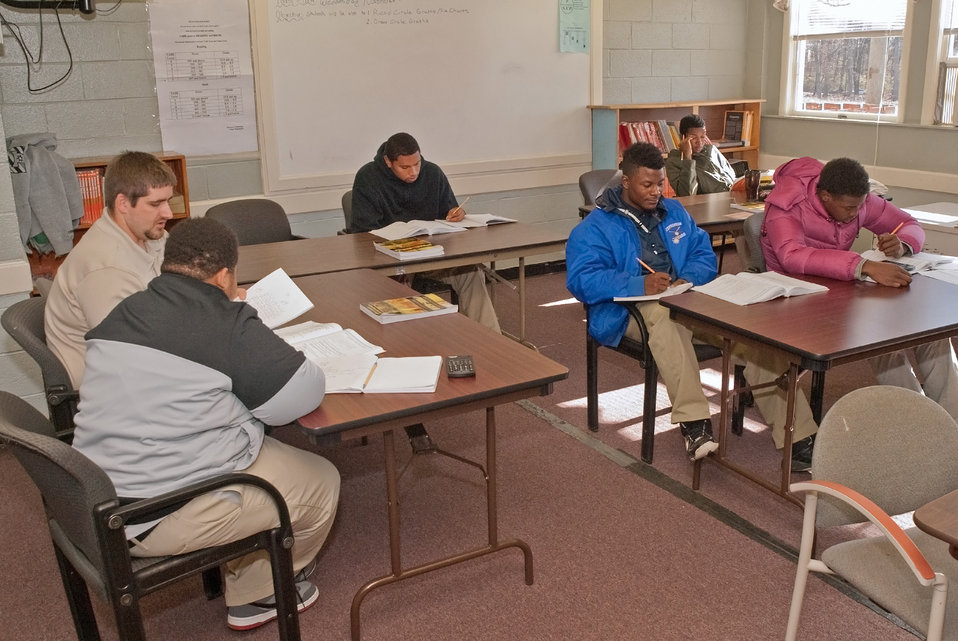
Students study at the Job Civilian Conservation Corp Center (JCCCC) in Harpers Ferry, WV on Nov. 8, 2012. The U.S. Forest Service manages 28 Job Corps Civilian Conservation Centers.